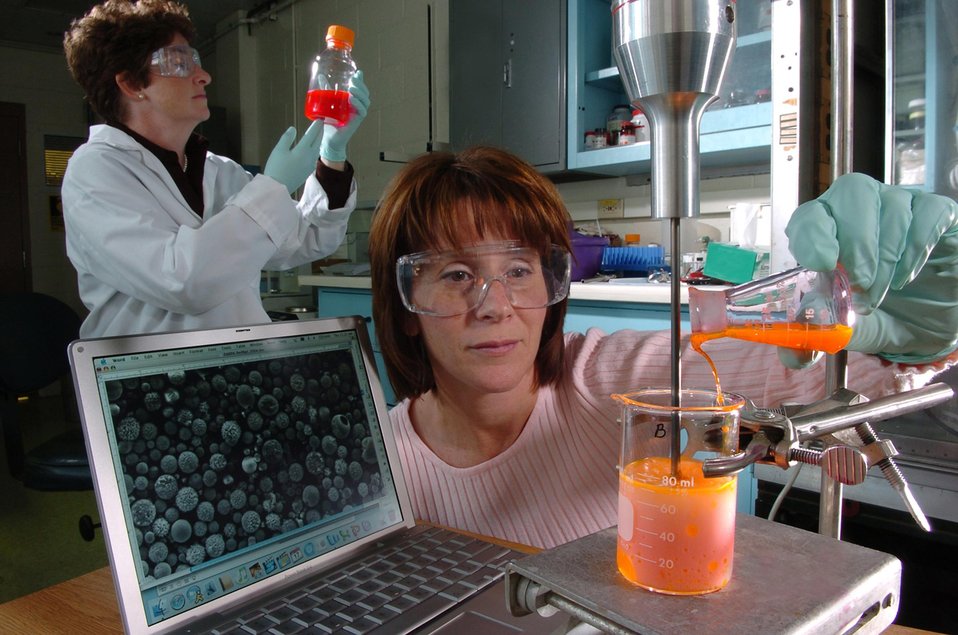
Argonne National Laboratory physical chemist mixes a polyethylene glycol (PEG) coating for synthesized polymer nanospheres as polymer chemist examines a different PEG formulation.

The coated nanosphere can be injected into humans following exposure to chemical, biological, or radiological toxins. The nanospheres selectively pick up these toxins and they are drawn out through a magnetic filtration system outside the body. The technology shows promise for delivering therapeutic drugs to target cells and organs. It is designed to directly remove the toxic agents from the bloodstream quickly and efficiently. Some potential applications are: biological toxin exposure, radiological toxin exposure and radioprotection, internal hemorrhage, brain swelling, stroke therapy, cancer therapy and acute trauma leading to kidney failure. The technology uses components approved by the U.S. Food and Drug Administration and a novel approach to magnetic filtration. This joint project by ANL, Armed Forces Radiobiology Research Institute and the University of Chicago hospitals.